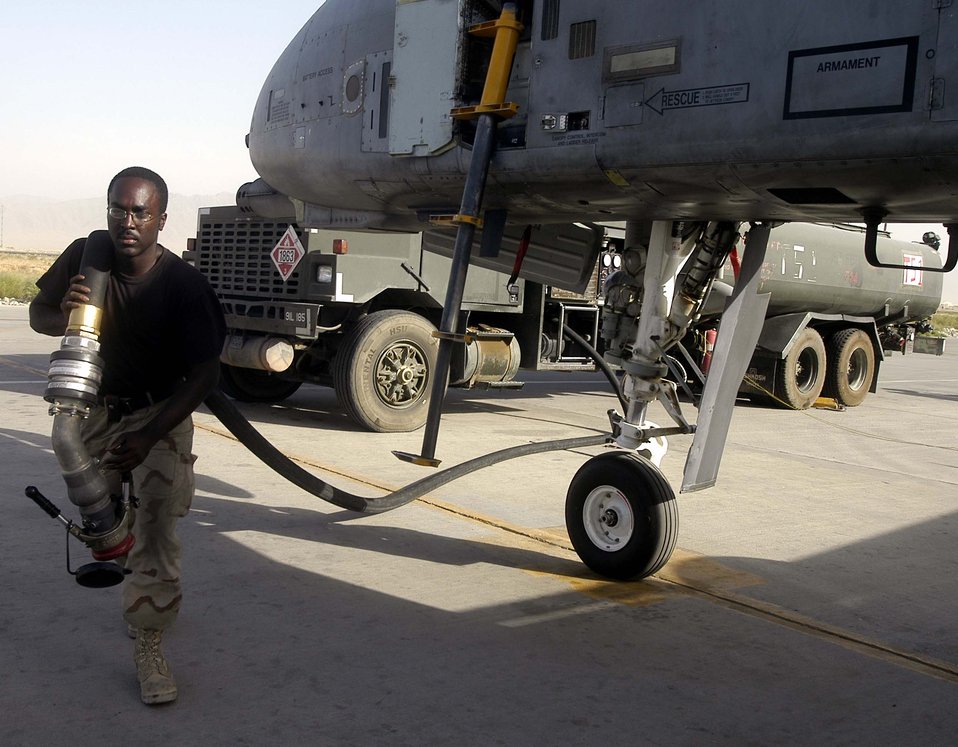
A million gallons and counting

Airman 1st Class Christopher Leach hauls a fuel hose from a tanker truck to an A-10 Thunderbolt II at Bagram Air Base, Afghanistan, on Aug. 5. Airman Leach has pumped more than 1 million gallons of jet fuel during his four-month air expeditionary force rotation at Bagram. The 455th Expeditionary Logistics Readiness Squadron Petroleum, Lubricants and Oil Flight has delivered almost 6.6 million gallons of fuel to military and civilian aircraft at Bagram since May. Airman Leach is deployed from Dover Air Force Base, Del.